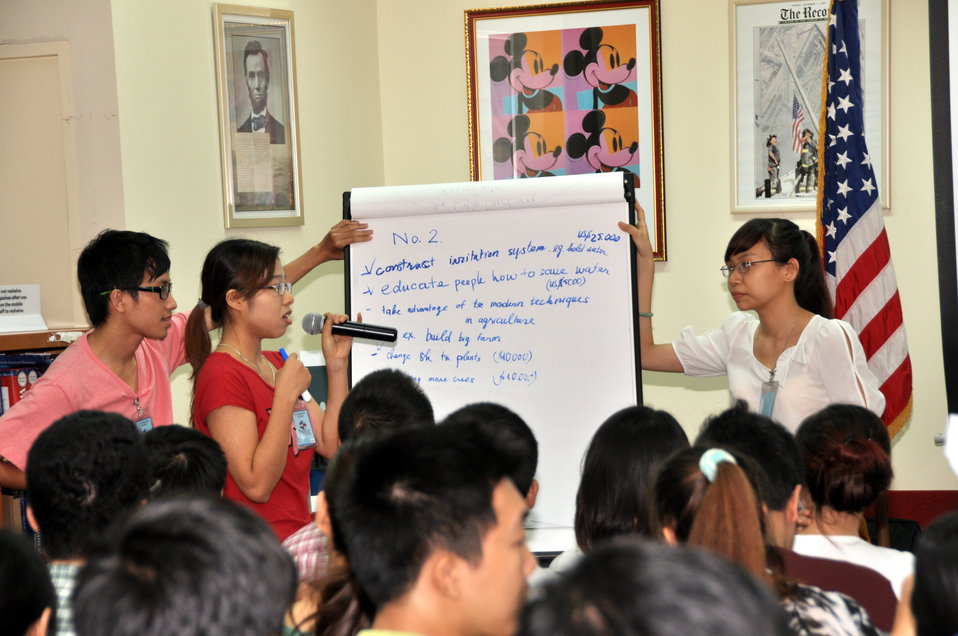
Climate Change Talk at the American Center

Hanoi, May 28, 2013.